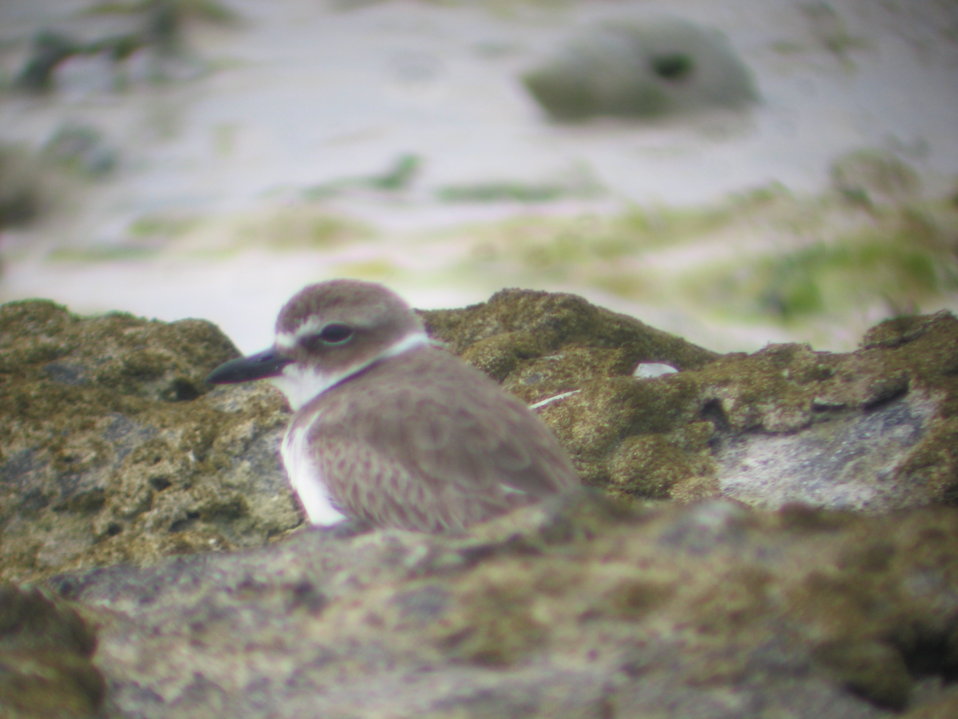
Wilson’s plover through spotting scope

Photo taken at Berry Islands.